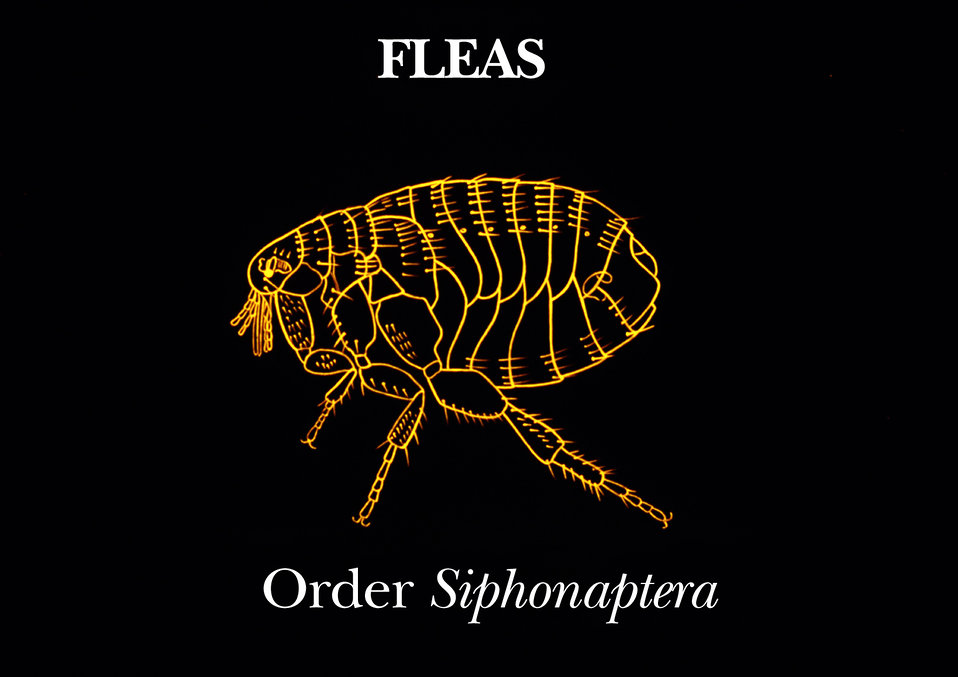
This illustration depicts a flea of the order Siphonaptera, derived from the Greek words 'siphon', and 'aptera' or 'wingless'.